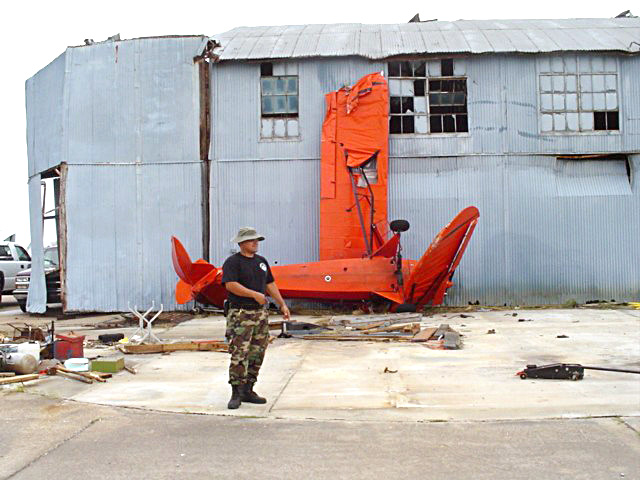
NEDERLAND, Texas -- Staff Sgt. Al Martinez surveys damage caused by Hurricane Rita to the Southeast Texas Regional Airport. When he arrived, the airport was inoperable, but the civil engineer soon had power up and running.